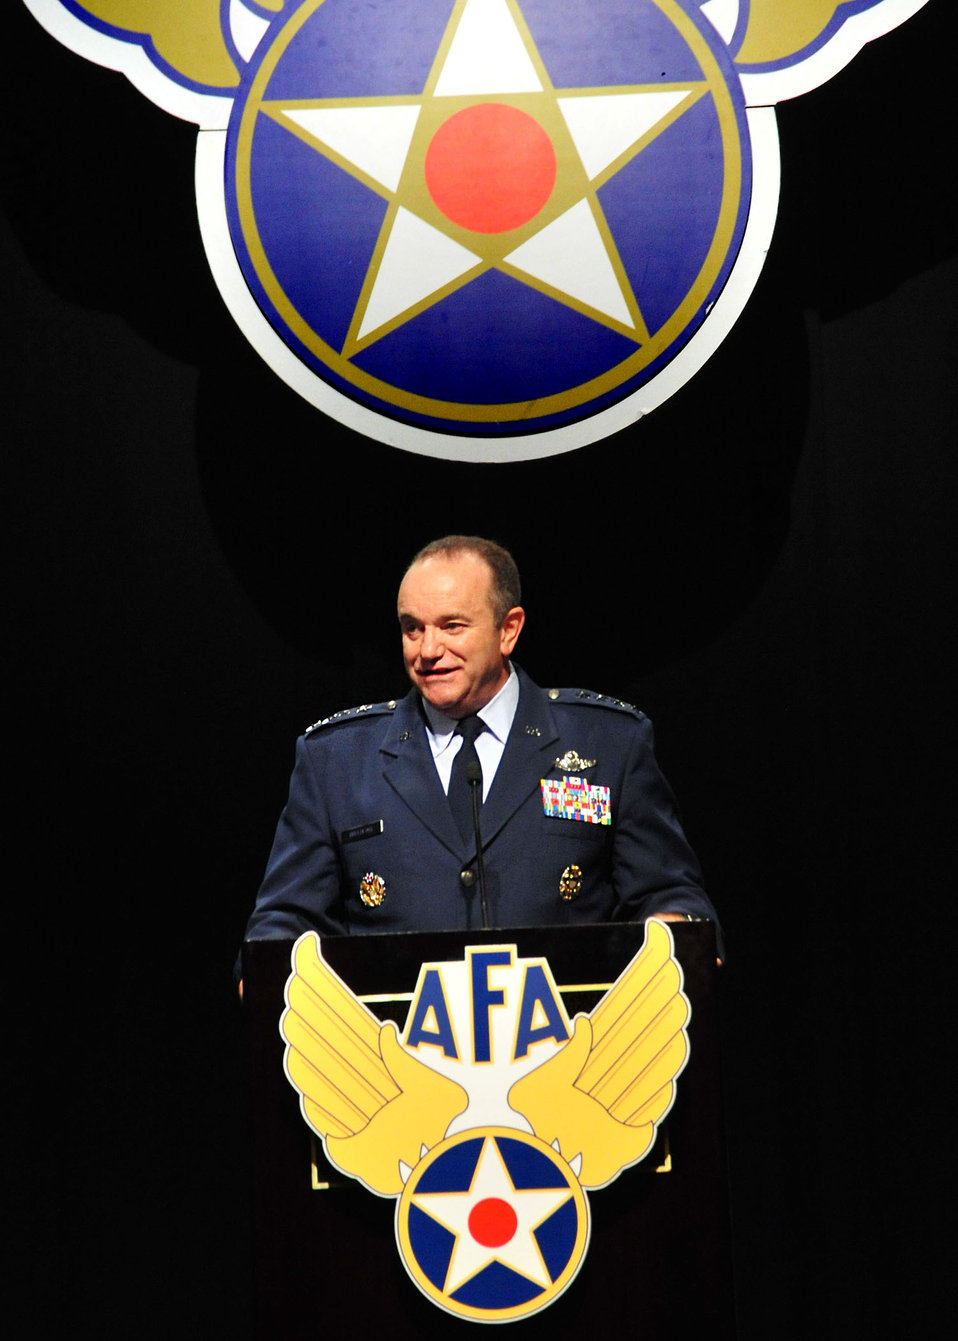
VCSAF: America is an air and space nation

Air Force Vice Chief of Staff Gen. Phil Breedlove speaks at the Air Force Association's 2011 Global Warfare Symposium in Los Angeles, Calif., Nov. 18, 2011. Breedlove discussed current operations as well as the unique and enduring capabilities the Air Force provides the nation.